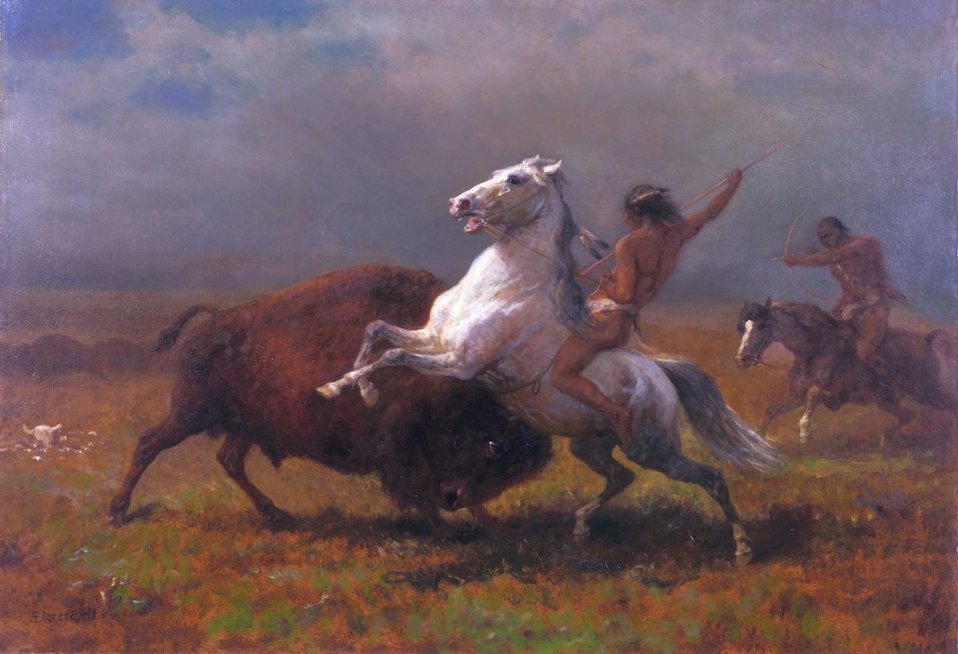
Albert Bierstadt - Study for The Last of the Buffalo